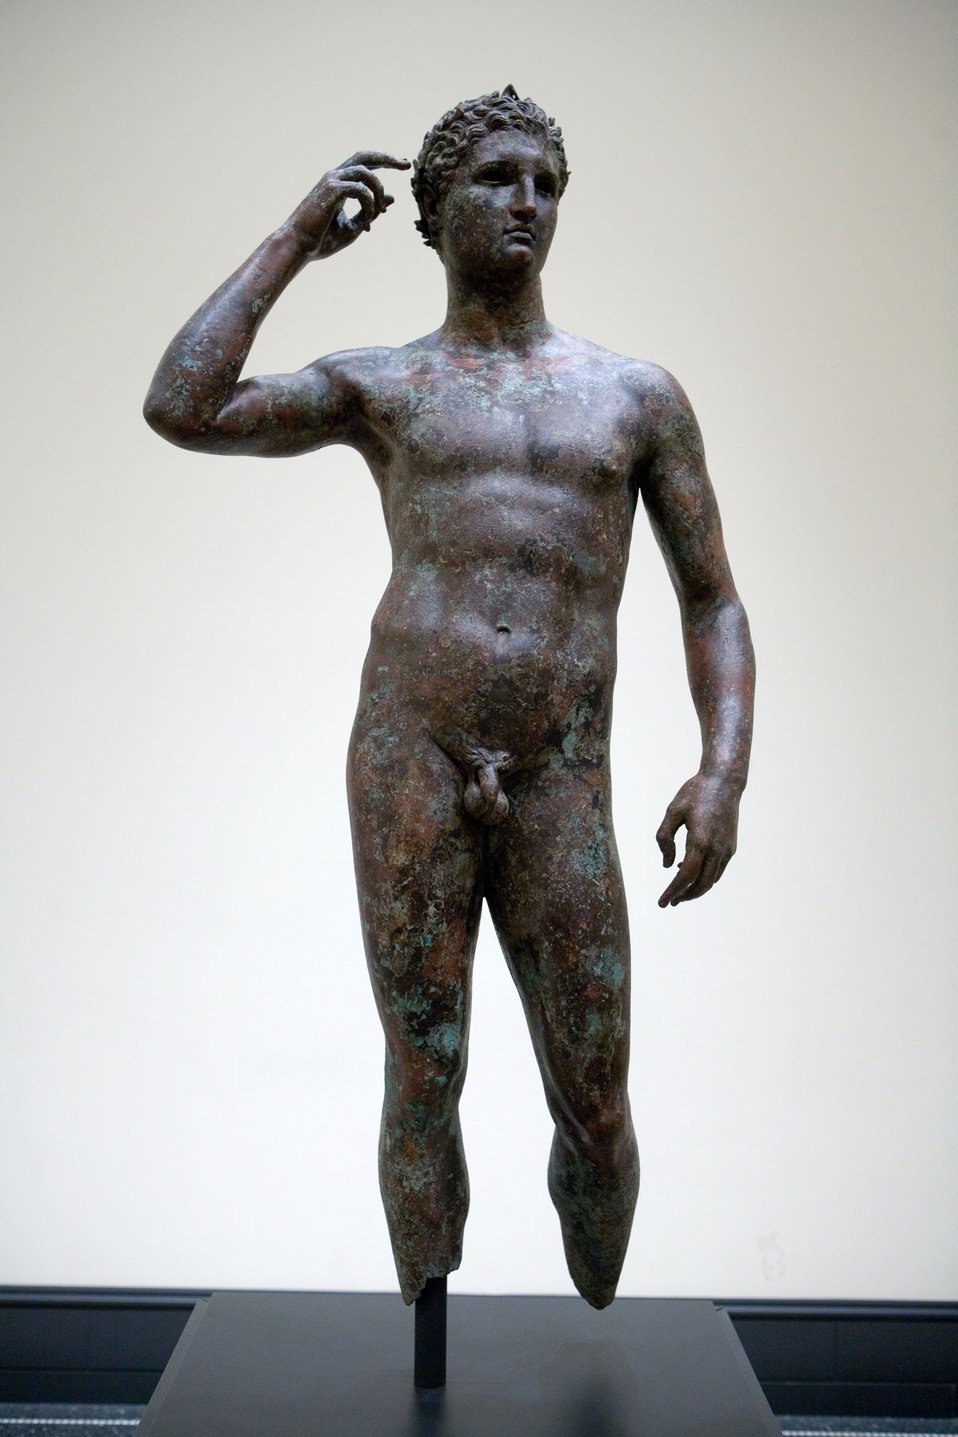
L'atleta di Fano